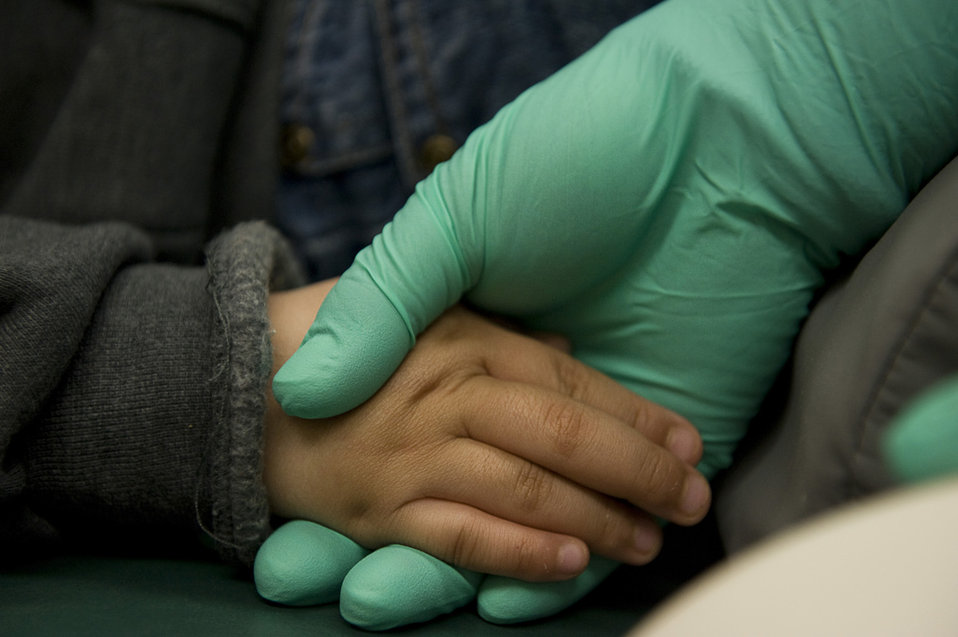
Guard, active-duty Airmen provide dental care to remote Alaskan village

A dental assistant holds 3-year-old, Tiana Griest's hand during a dental procedure April 15, 2010, in Kotzebue, Alaska. Airmen deployed in support of Operation Arctic Care, a joint innovative readiness training exercise aimed at providing medical care to remote villages in northeast Alaska.